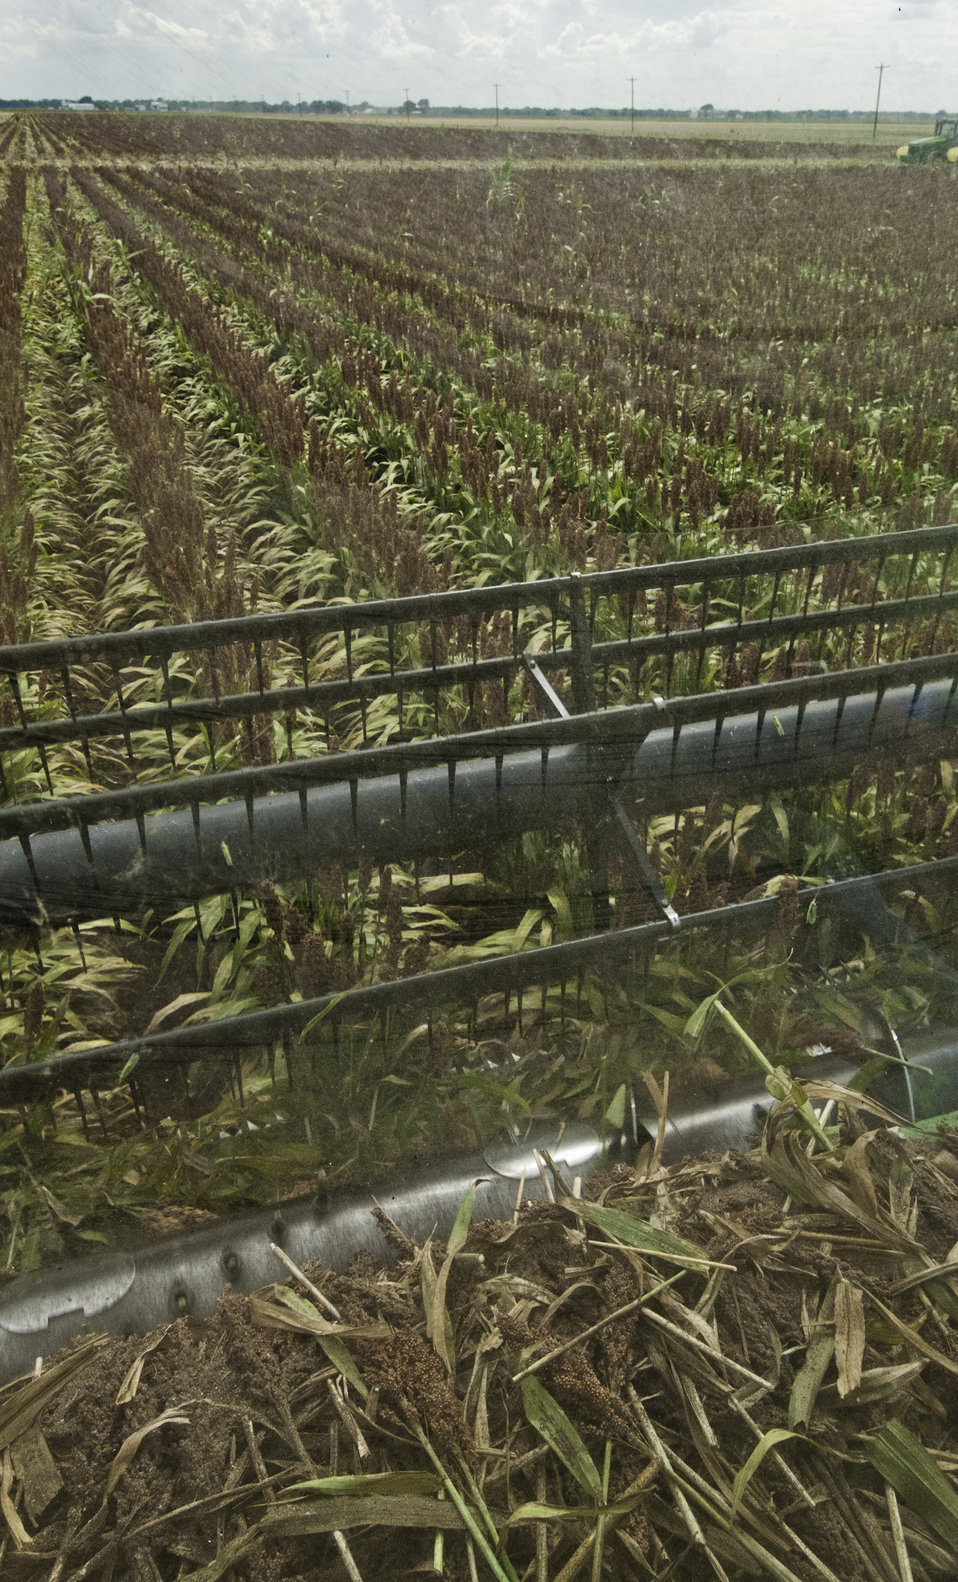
Grain sorghum is harvested on the Wilder Farms in Navasota, TX on Aug. 23, 2013.